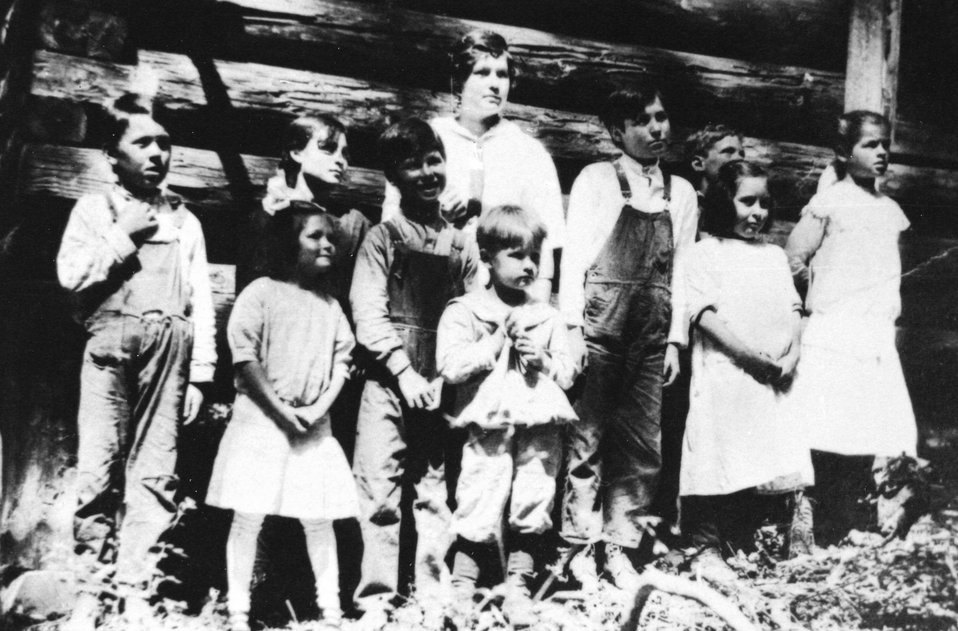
School at Marial C.1912. L to R. George Hall, Marie Frye, Alma Hall, Elwin Frye, Leslie Frye, Claude Hall, Belmont Jones, Myrtle Hall (front) and Myrtle Jones.